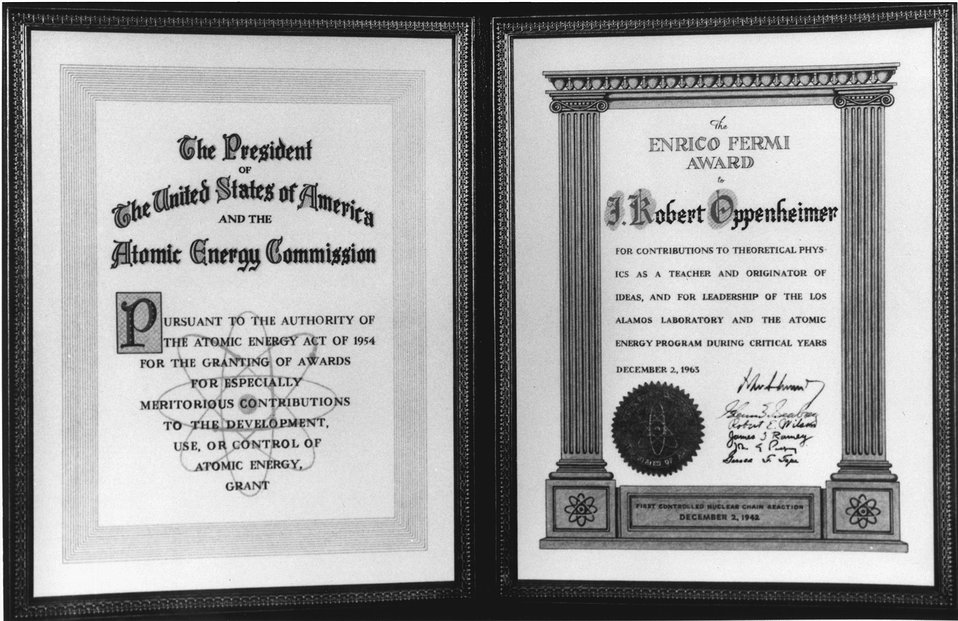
Oppenheimer's Fermi Award. c. 1963